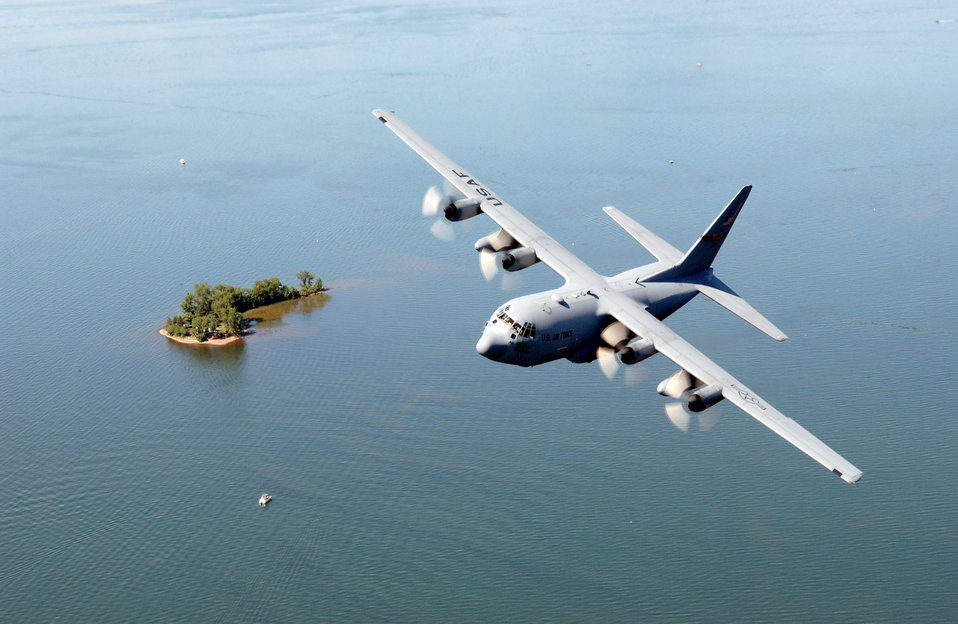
Soaring Hercules

A C-130 Hercules from the Minnesota Air National Guard's 133rd Airlift Wing flies over the Mille Lacs Lake area in northern Minnesota during a training mission Aug. 20.